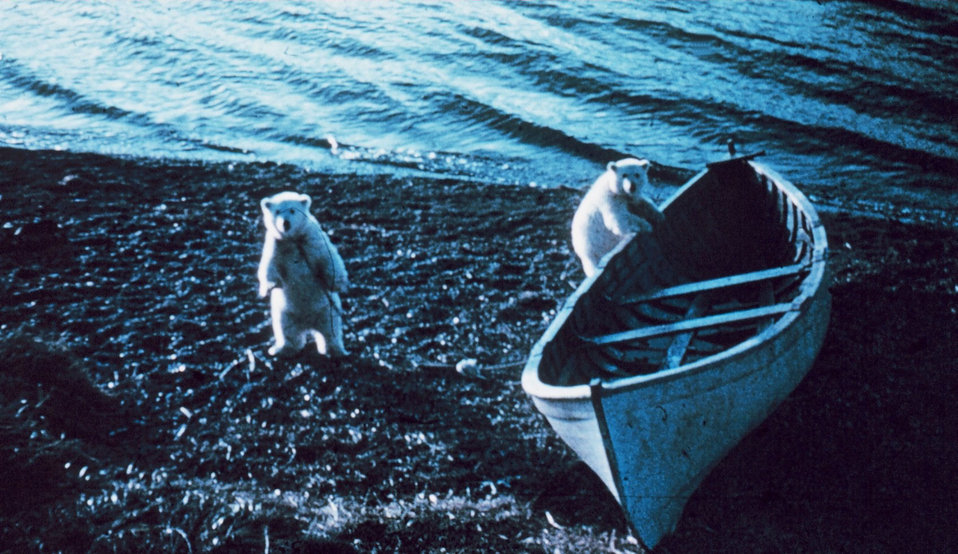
Orphaned polar bear cubs - Ursus maritimus - being sent to zoo.